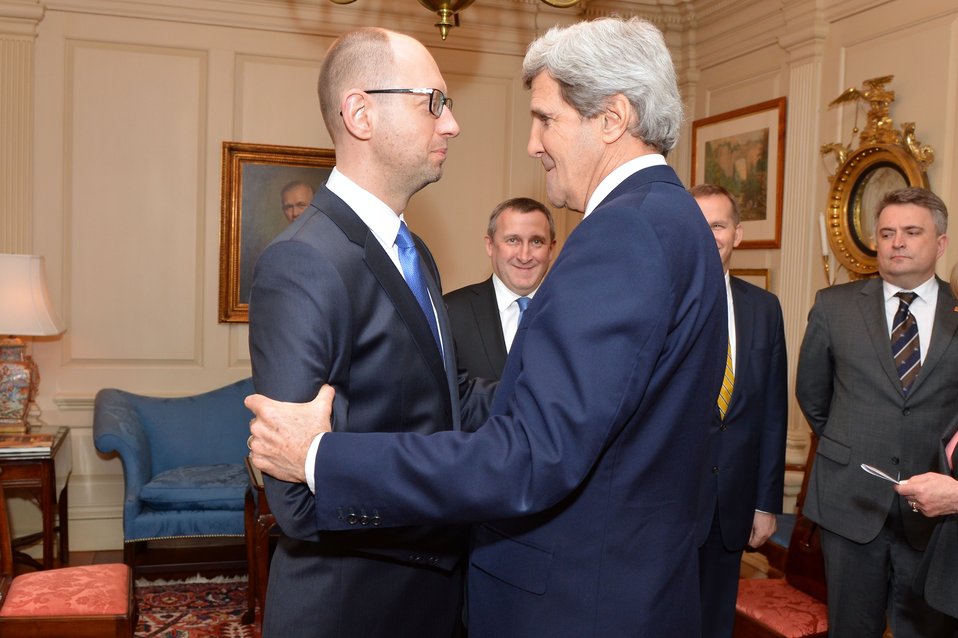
Secretary Kerry Greets Ukrainian Prime Minister Yatsenyuk

U.S. Secretary of State John Kerry greets Ukrainian Prime Minister Arseniy Yatsenyuk before their bilateral meeting at the U.S. Department of State in Washington, D.C., on March 12, 2014.